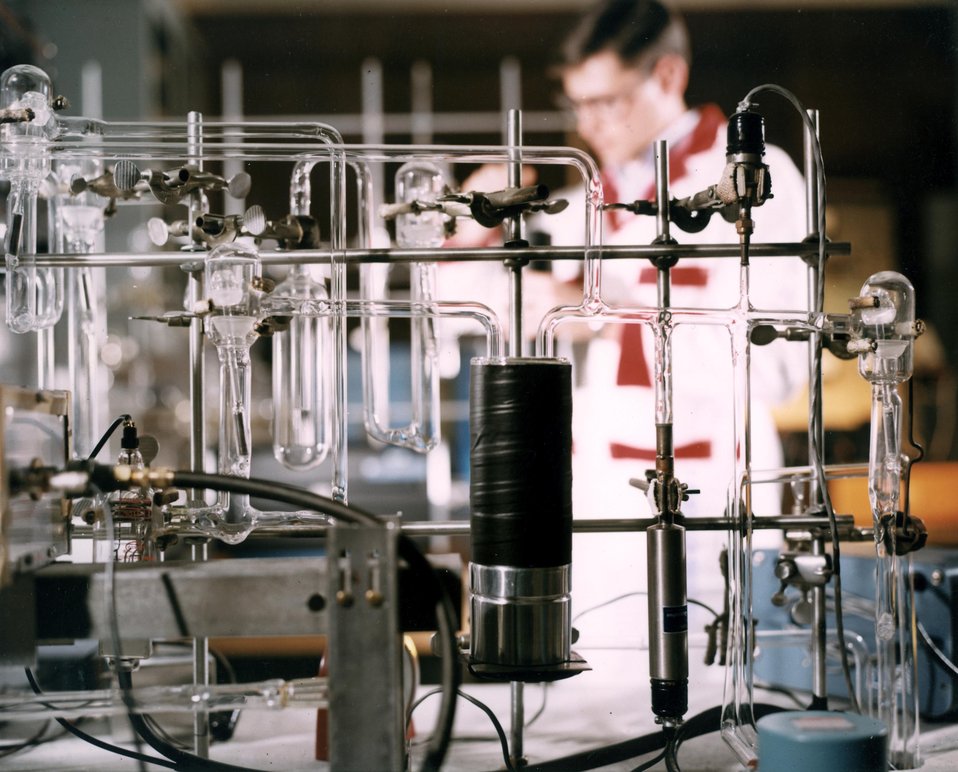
Operator carefully mixes coolant for addition to cold trap in an all glass vacuum system in which gases evolved from crystals irradiated by ultra-violet light from lamp (lower left) are measured. c. 1967